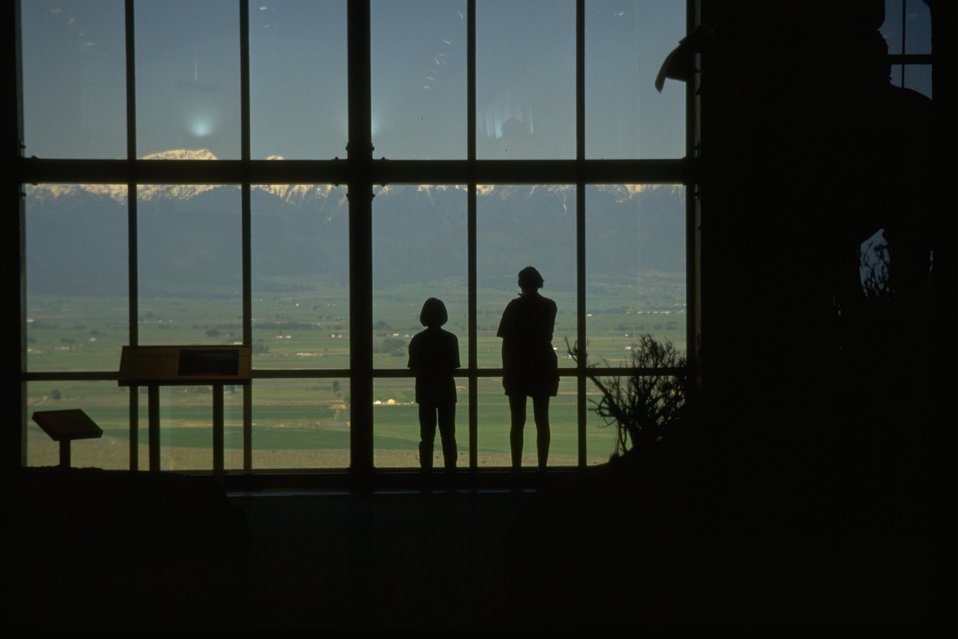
Visitors of the NHOTIC at viewing window.